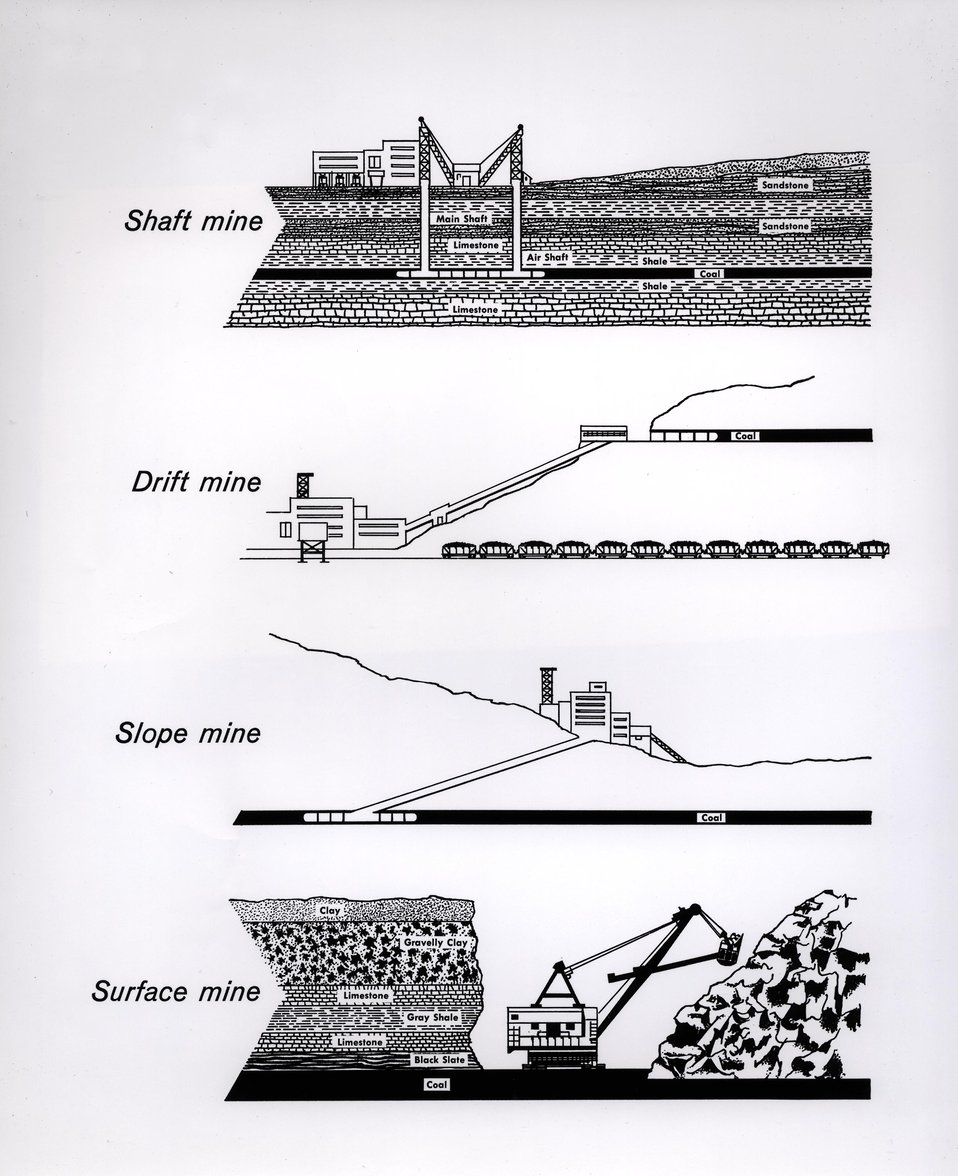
In a shaft mine, miners reach the coal seam, and coal is brought to the surface by elevators operating in shafts.